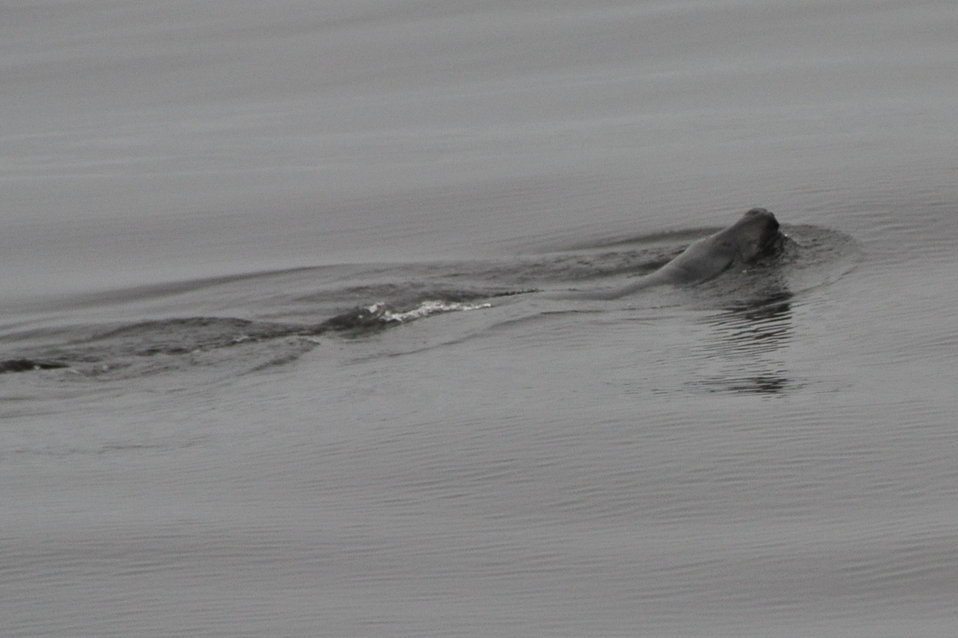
August 2009, curious harbor seal by the Kennebec River

As we deployed the CTD and rosette sampler to collect water quality information and samples at the mouth of the Kennebec, we noticed a couple of seals had popped by to see what we were up to!